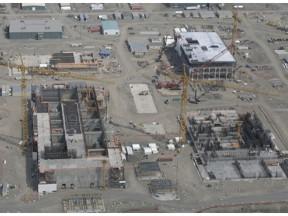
Hanford WTP Construction

The Waste Treatment Plant Construction Site, located at Hanford, WA, May 2006, clockwise from top right, Low-Activity Waste Facility, High-Level Waste Facility, Pretreatment Facility, and Analytical Laboratory.